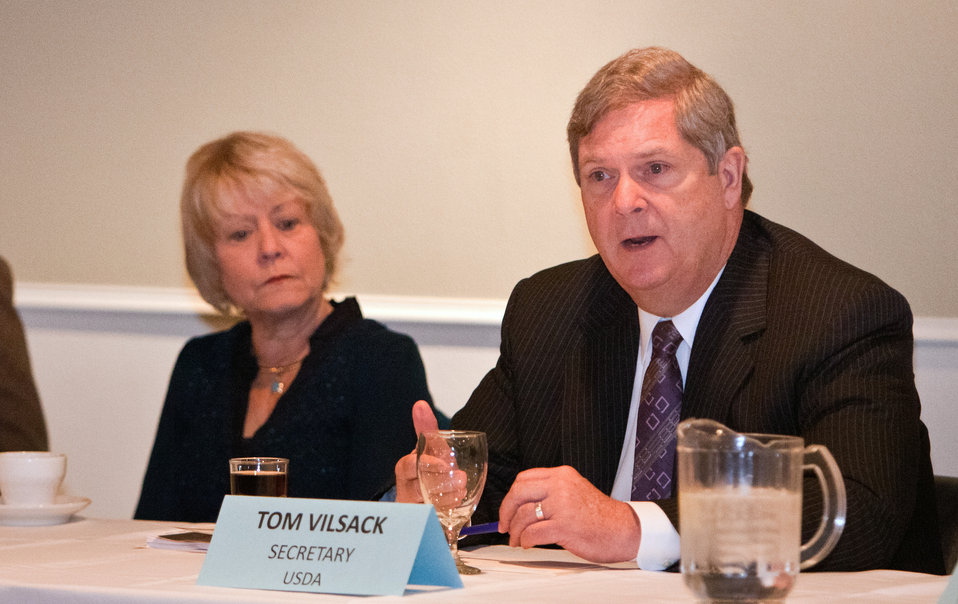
Agriculture Secretary Tom Vilsack speaks at a community roundtable in Weaverville, CA on Dec. 10, 2012. (L to R Christie Vilsack and Secretary Vilsack).